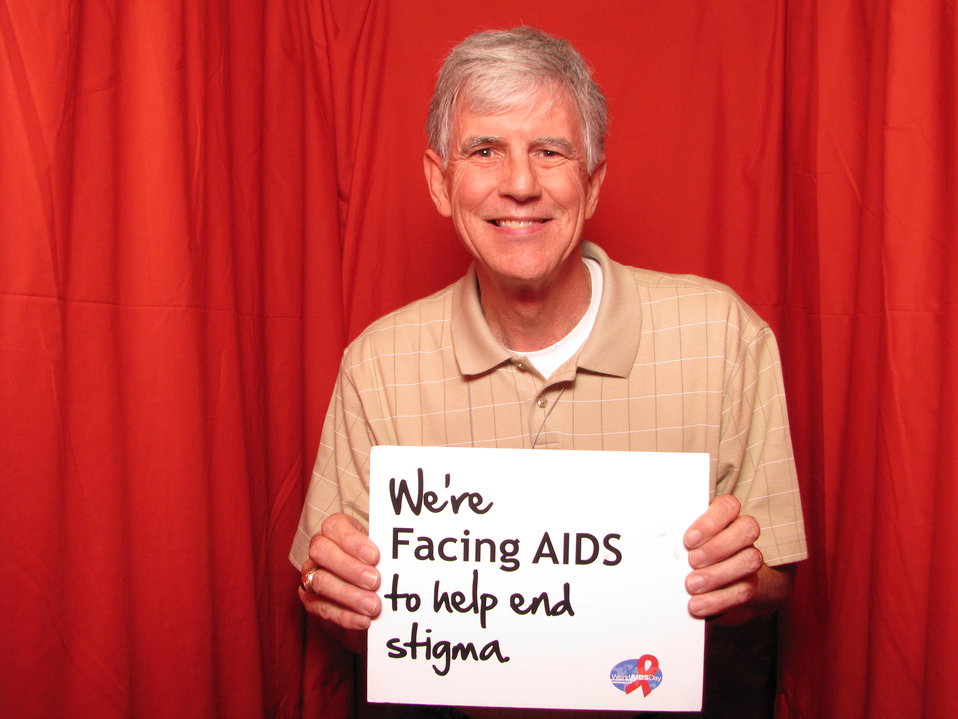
We're FACING AIDS to help end stigma.

From the AIDS.gov photo booth at the U.S. Conference on AIDS, September 2010 (Orlando, FL).